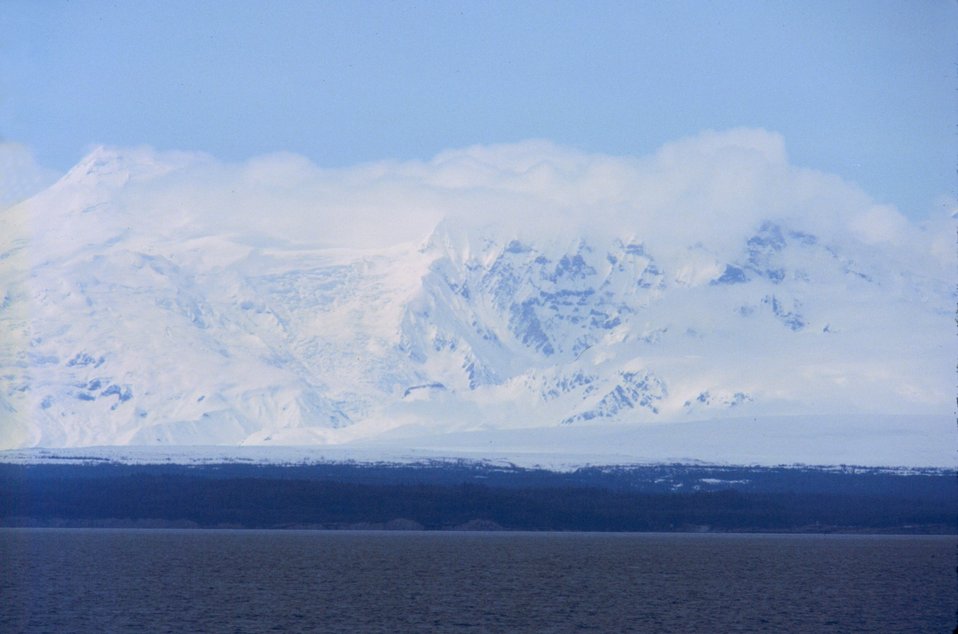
Upper Cook Inlet looking west.